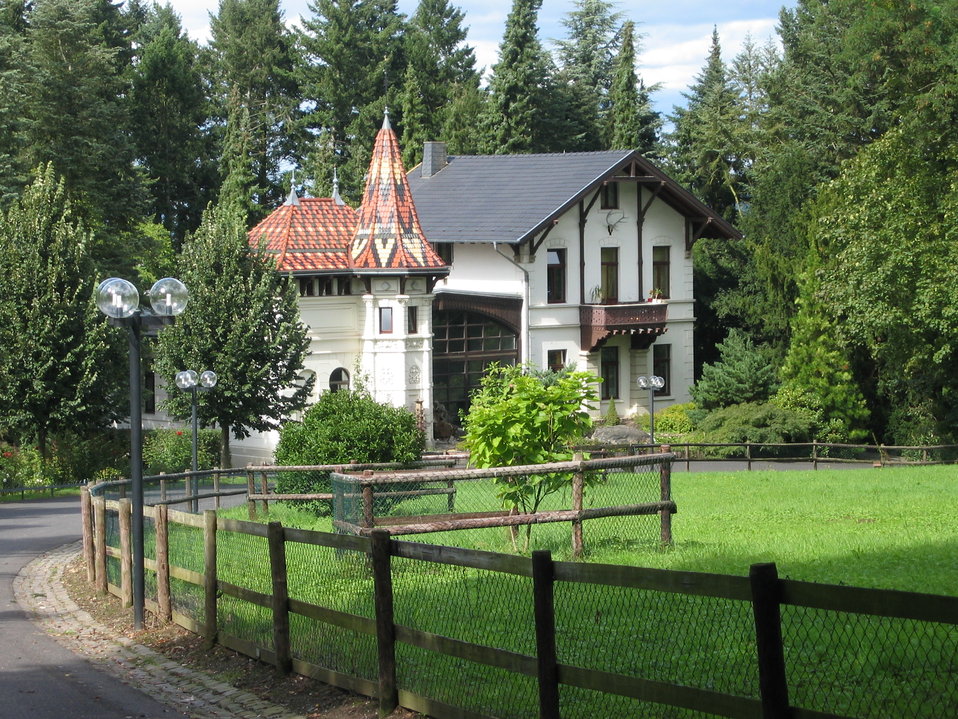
Deutsch: Jägerhaus des Aloisiuskollegs